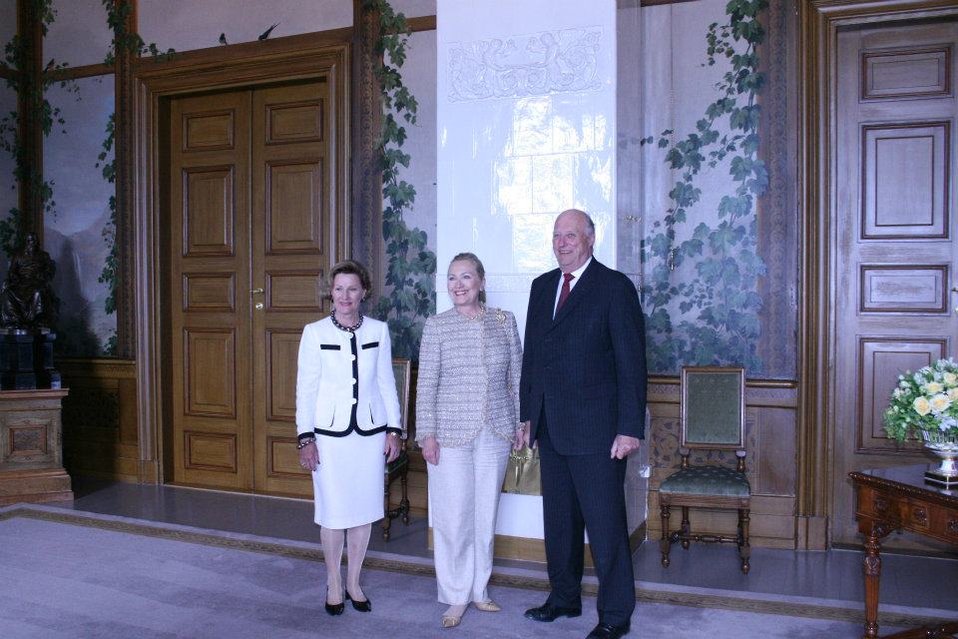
Secretary Clinton Meets With King Harald and Queen Sonja of Norway

U.S. Secretary of State Hillary Rodham Clinton meets with King Harald and Queen Sonja of Norway in Oslo on June 1, 2012.